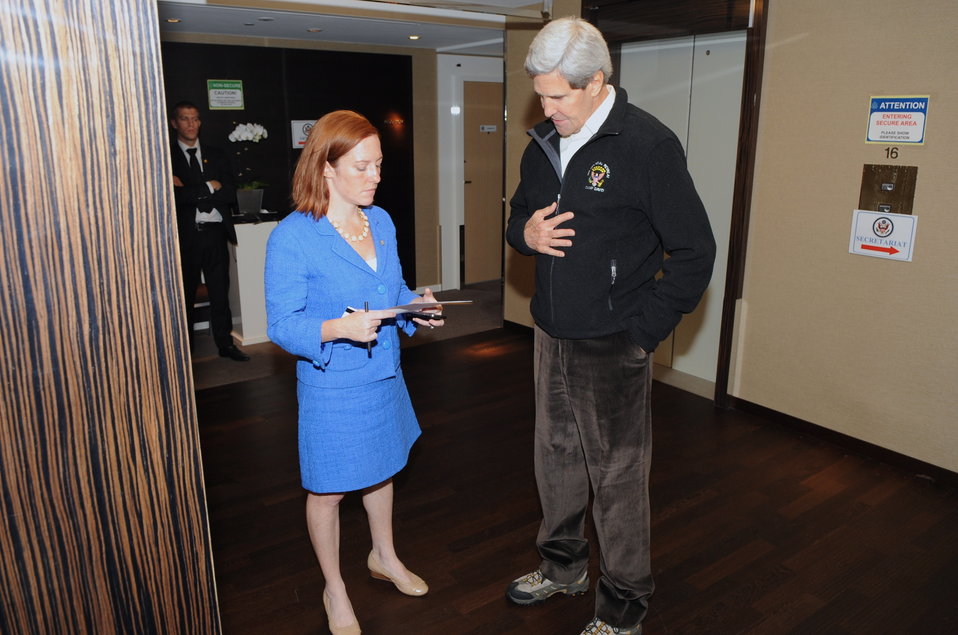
Secretary Kerry Chats With State Department Spokesperson Psaki

12:36 a.m. - September 14, 2013 - U.S. Secretary of State John Kerry chats with State Department Spokesperson Jennifer Psaki regarding negotiations with Russian officials over the elimination of Syrian chemical weapons.